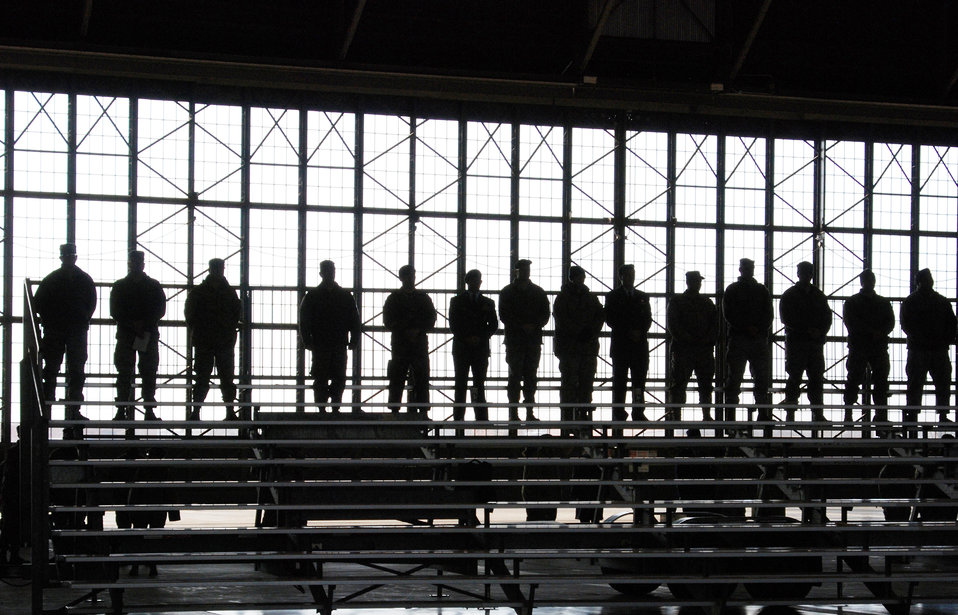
Paying respect

Air Force Reserve Command members are silhouetted by the doors of a hangar at Scott Air Force Base, Ill., Jan. 9, 2010. They were at a memorial service for Tech. Sgt. Anthony C. Campbell Jr. , a member of the 932nd Airlift Wing who was killed in action in Afghanistan Dec. 15, 2009.